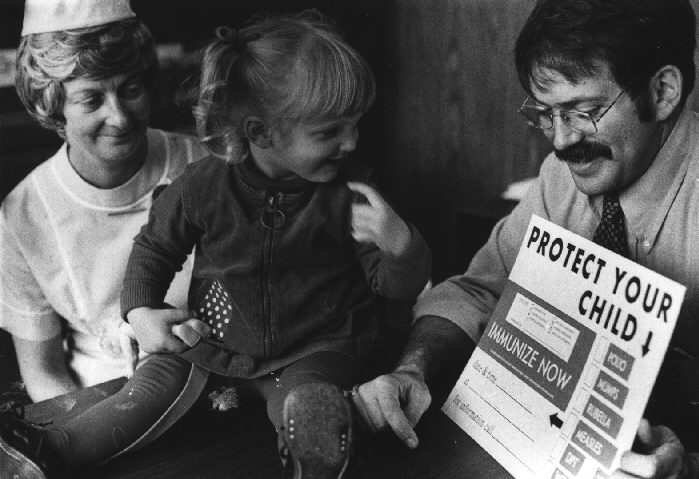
Child with doctor and nurse at immunization clinic.